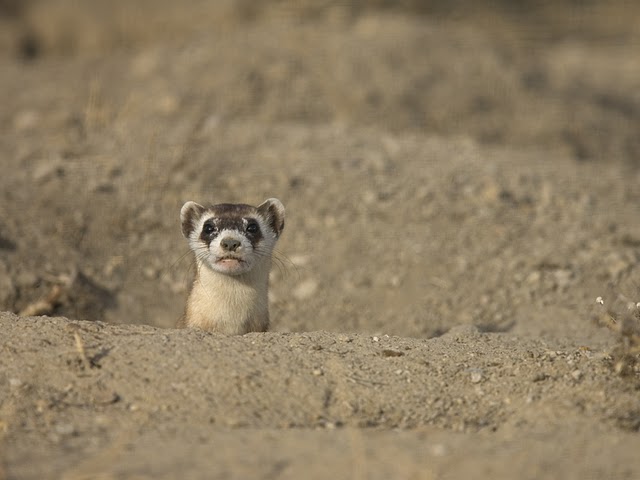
Black-footed Ferret Head

Black-footed ferret at the National Black-footed Ferret Conservation Center